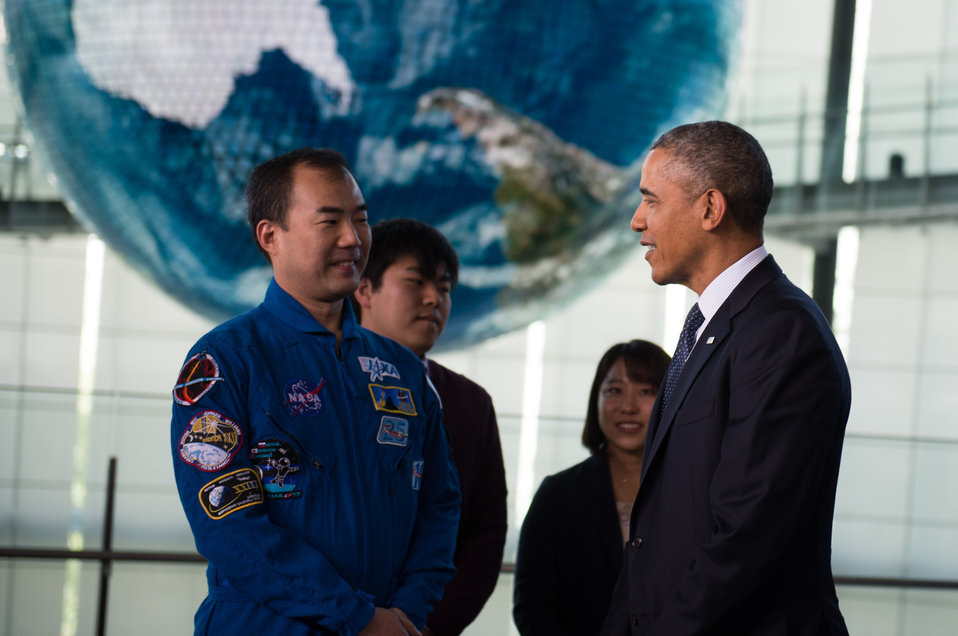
President Obama Talks to Japanese Astronaut and Students

U.S. President Barack Obama talks to Japanese astronaut Soichi Noguchi and students during his visit to the Miraikan (the National Museum of Emerging Science and Innovation) in Tokyo, Japan, on April 24, 2014.